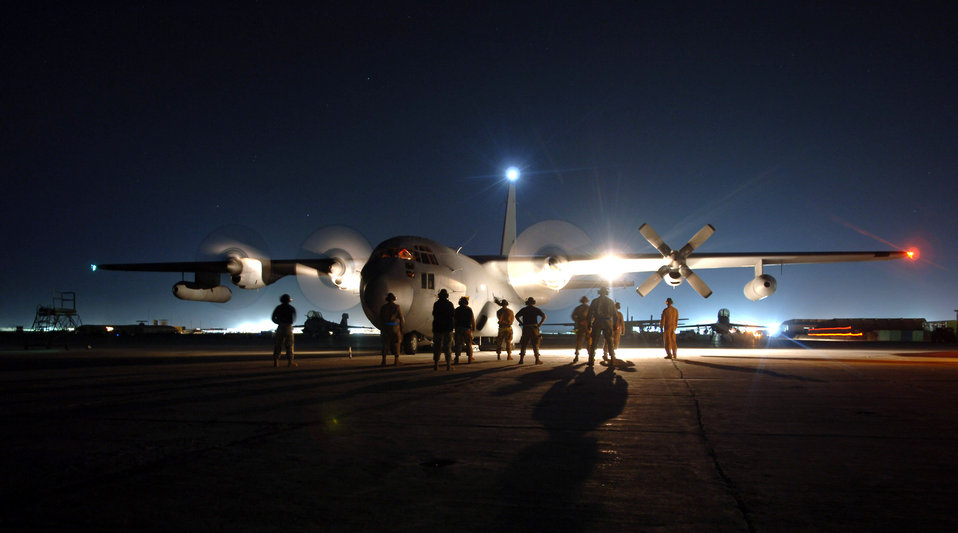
Troops look up to EC-130 support

BAGRAM AIR BASE, Afghanistan (AFPN) -- Maintainers' shadows stretch across the tarmac here as they watch an EC-130H Compass Call start its engines before a combat sortie. The aircraft, belonging to the 41st Expeditionary Electronic Combat Squadron, deployed from Davis Monthan Air Force Base, Ariz. It left on its mission Oct. 22. Since November 2004, EC-130s have supported more that 1,500 air-support requests from ground forces participating in Operation Enduring Freedom.